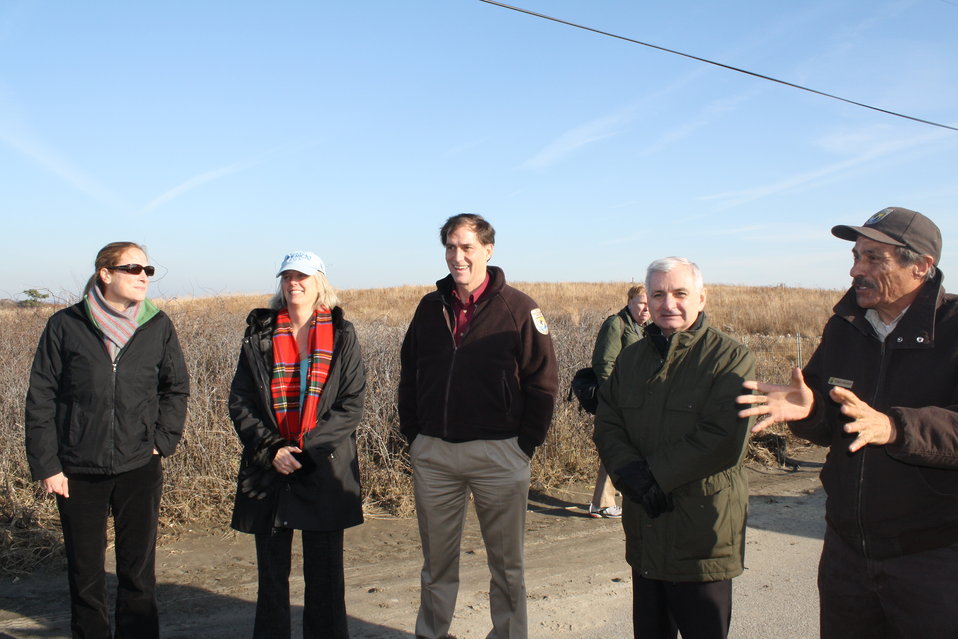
Viewing damage at Sachuest Point (RI)

U.S. Fish and Wildlife Service Northeast Region Director Wendi Weber, Director of the Rhode Island Department of Environmental Management Janet Coit, U.S. Fish and Wildlife Service Director Dan Ashe, Senator Jack Reed of Rhode Island, and Project Leader of the Rhode Island National Wildlife Refuge Complex Charlie Vandemoer discuss the effects of Hurricane Sandy on the refuge before going to view damage.